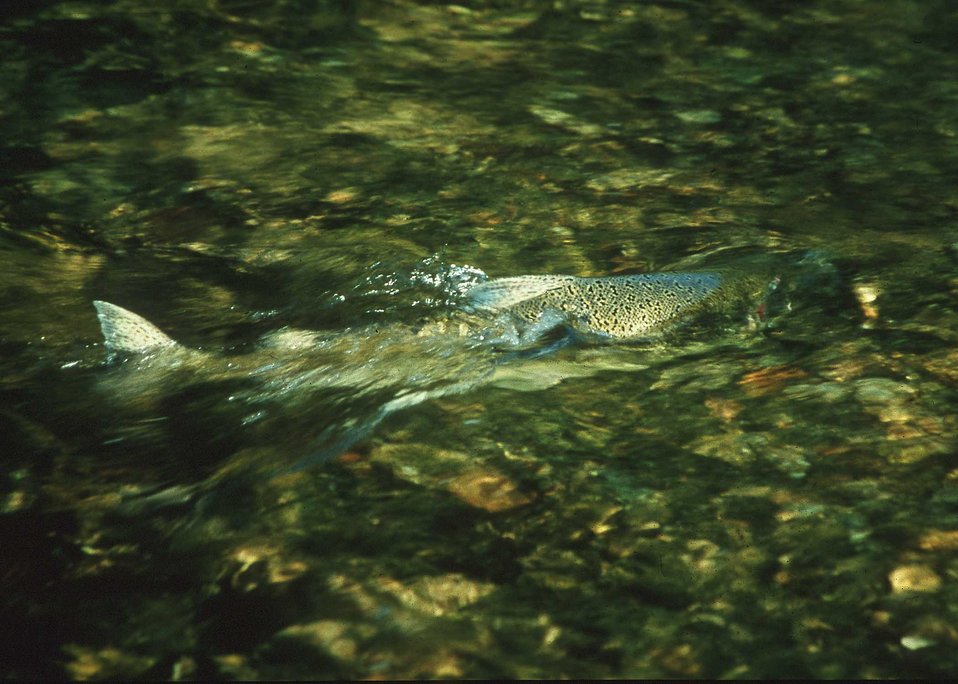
Salmon resting in pool during migration.